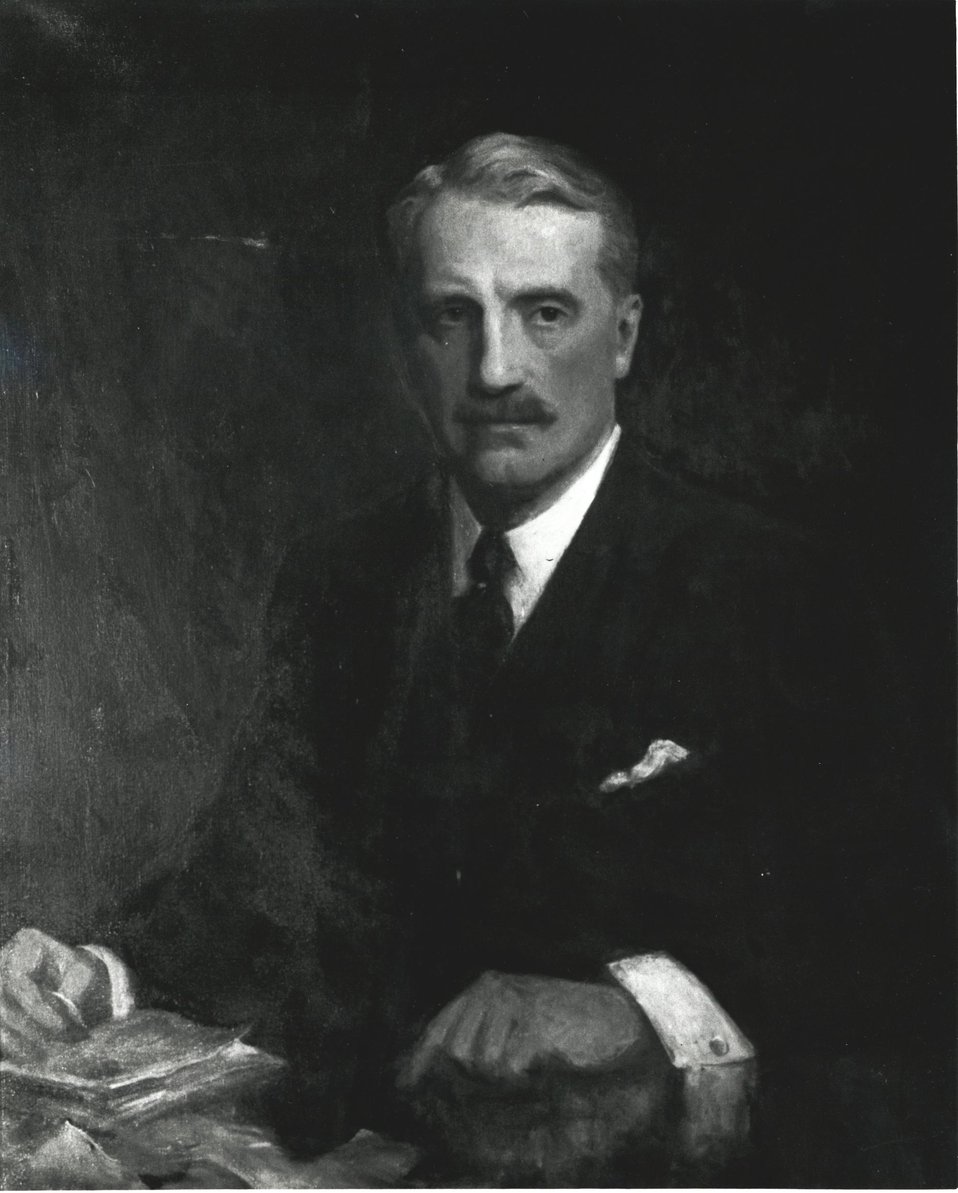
Bainbridge Colby, U.S. Secretary of State, March 23, 1920 to March 4, 1921